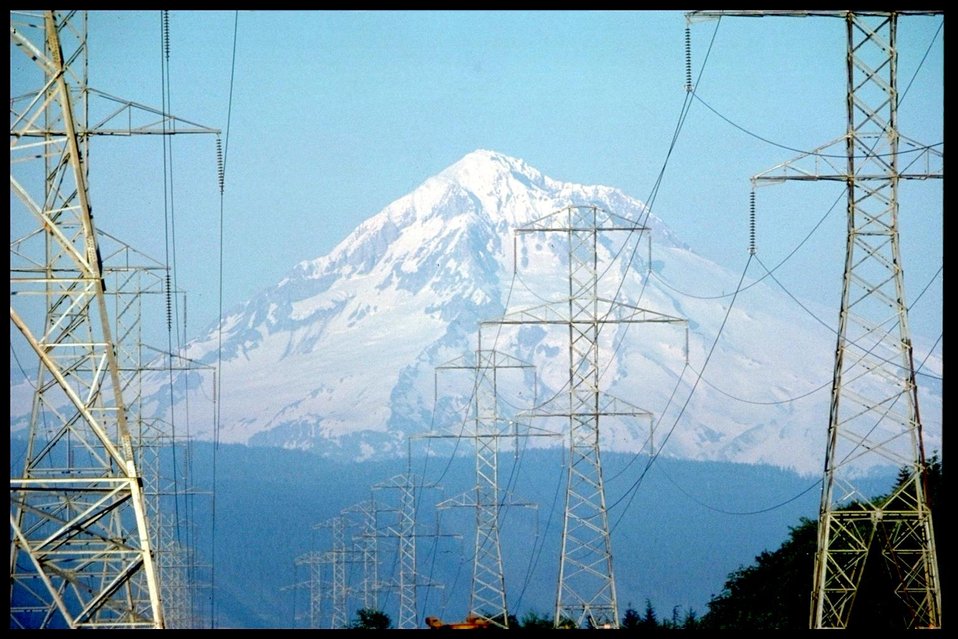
MOUNT HOOD WITH TRANSMISSION TOWERS AND LINES IN FOREGROUND.

THE BONNEVILLE POWER ADMINISTRATION IS A FEDERAL AGENCY THAT MARKETS AND DELIVERS MORE THAN HALF THE PACIFIC NORTHWEST'S ELECTRICITY AND MAINTAINS A NETWORK OF MORE THAN 12,300 MILES OF TRANSMISSION LINES.